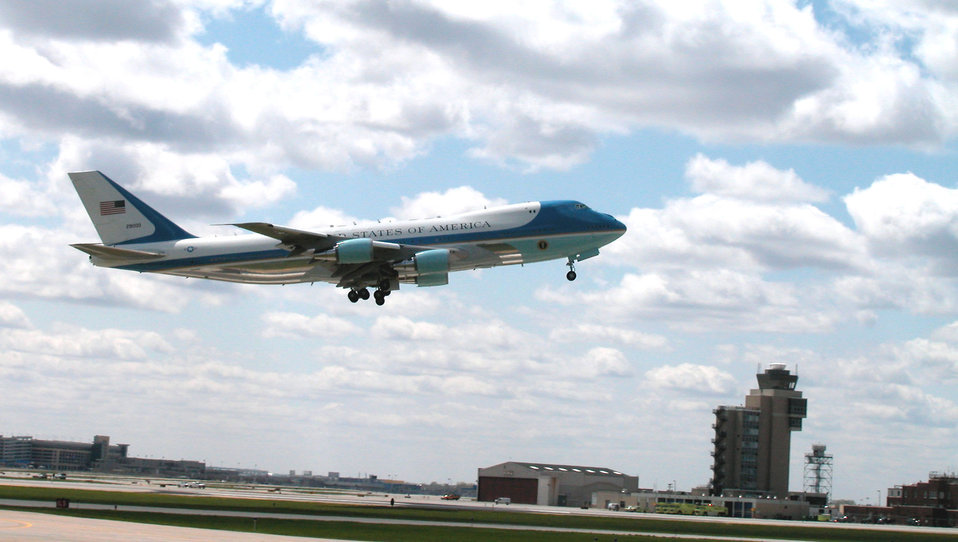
Air Force One

MINNEAPOLIS -- Air Force One lifts off from here April 26th. Principal differences between the VC-25A and the standard Boeing 747, other than the number of passengers carried, are the electronic and communications equipment aboard Air Force One, its interior configuration and furnishings, self-contained baggage loader, front and aft air-stairs, and the capability for in-flight refueling. These aircraft are flown by the presidential aircrew, maintained by the presidential maintenance branch, and are assigned to Air Mobility Command's 89th Airlift Wing, Andrews Air Force Base, Md.